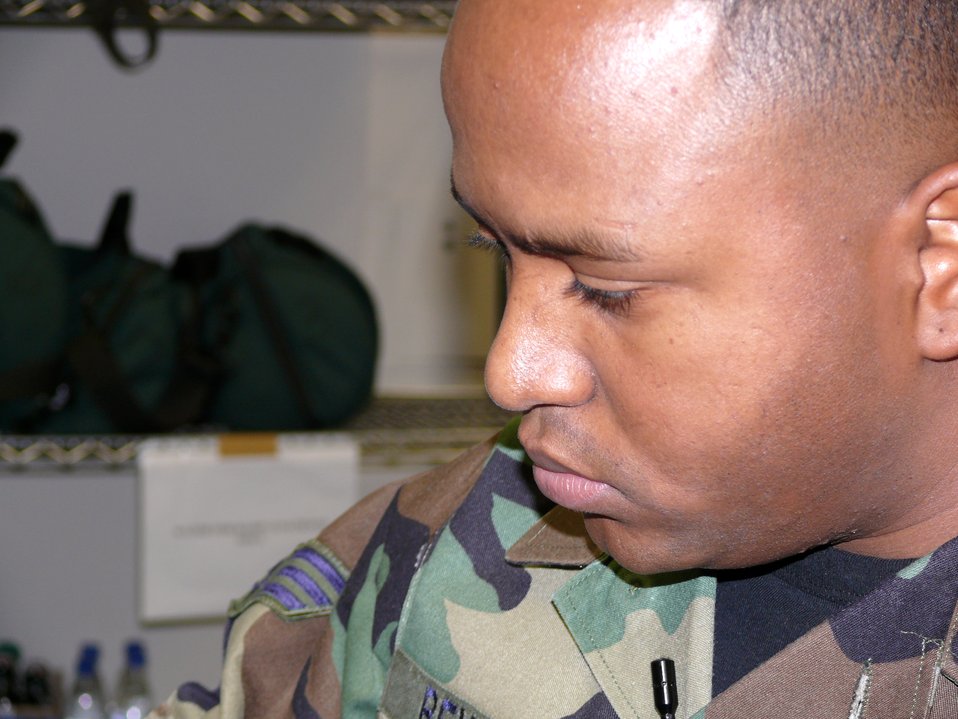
Serving through the season: Senior Airman Jose Reyes

Senior Airman Jose Reyes is an Air Force Reserve medical technician deployed to Ramstein Air Base, Germany.